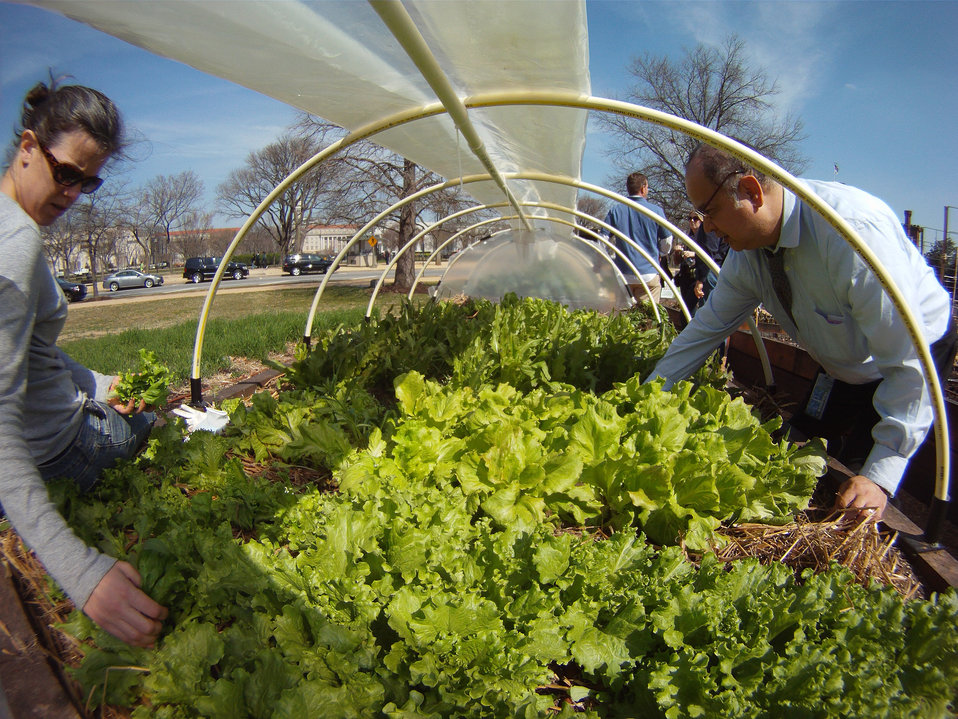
U.S. Department of Agriculture (USDA) Agricultural Economist Tiffany Arthur (left) harvests lettuce, while Operations Program Specialist Richard Fierroz (right) pulls weeds in The People's Garden in Washington DC, on Thursday, March 17, 2011. Harvesting the largest leafs, allows the plant to continue to grow and can be harvested once a week.

Volunteer pitch in several times a week, at various times of the day (before or after work hours, or during lunchtime) to weed, mulch, plant, water and what ever it takes to grow a wide variety of produce. Although a few are ornamental, most are destined for charity kitchens. Located on the corner of Jefferson Dr. SW and 12th St. SW, people often stop to ask questions about the garden. Part of the volunteers’ training is to be a spokes person for the People's Garden Initiative, an effort by the USDA that challenges its employees to establish People's Gardens at USDA facilities worldwide or help communities create gardens. People's Gardens vary in size and type, but all have a common purpose - to help the community they're within and the environment.